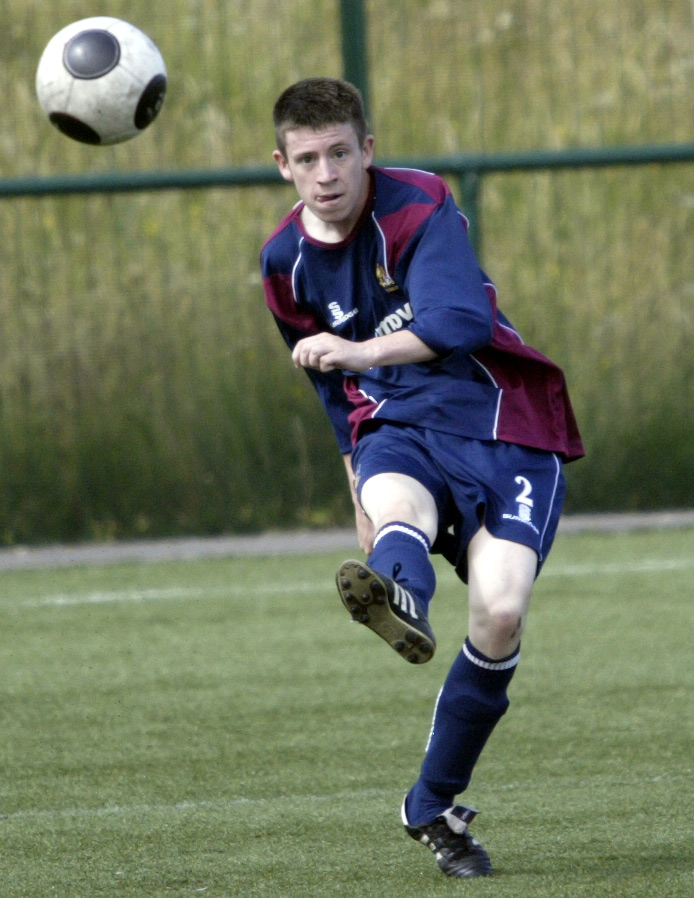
Prestwich Football Club 2009/10 Season